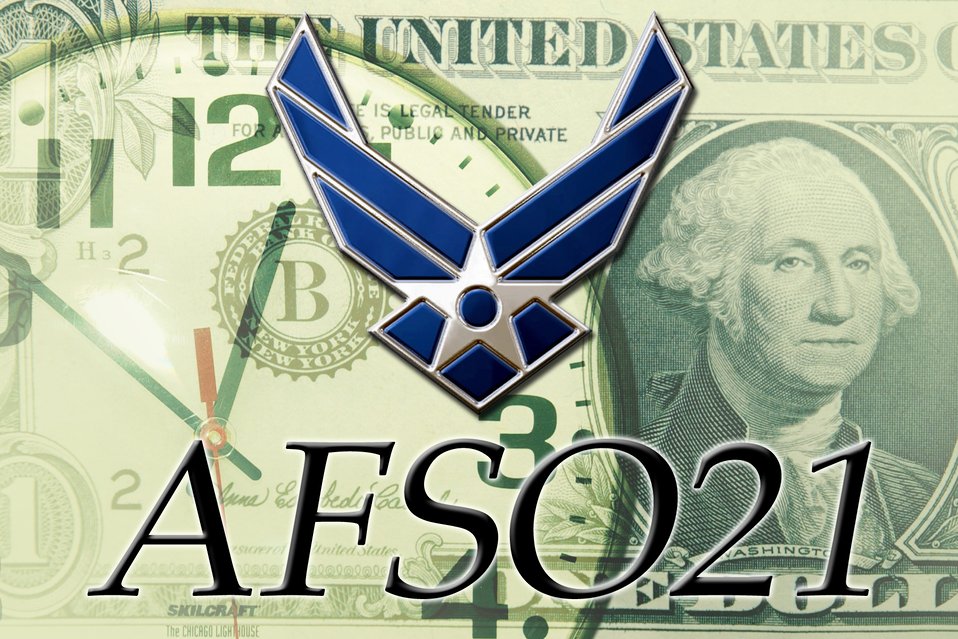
AFSO 21 contributes to faster overseas processing

Air Force Smart Operations for the 21st Century, or